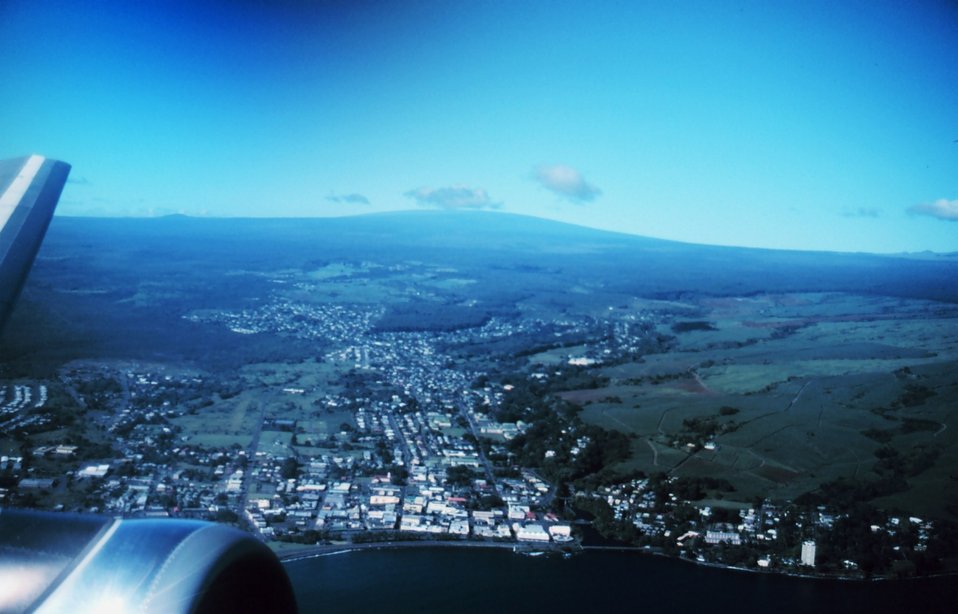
Hilo from the air after taking off for Maui